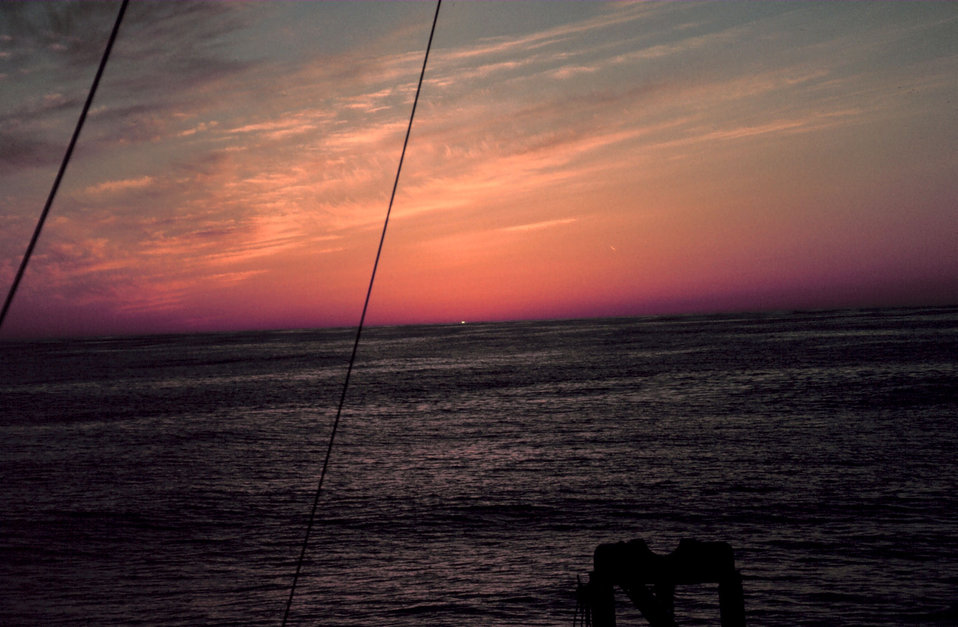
Swells from a far-away storm are apparent on the sea's surface as the sun disappears below the horizon. Maybe this was a try for the elusive green flash that sometimes is apparent at sunset on clear nights.